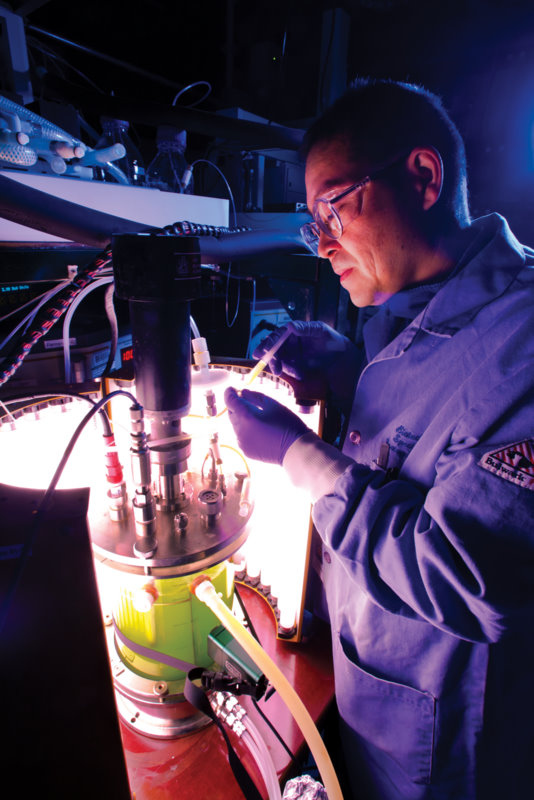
Algae science for biofuel production and other applications is a growing field for Los Alamos National Laboratory.